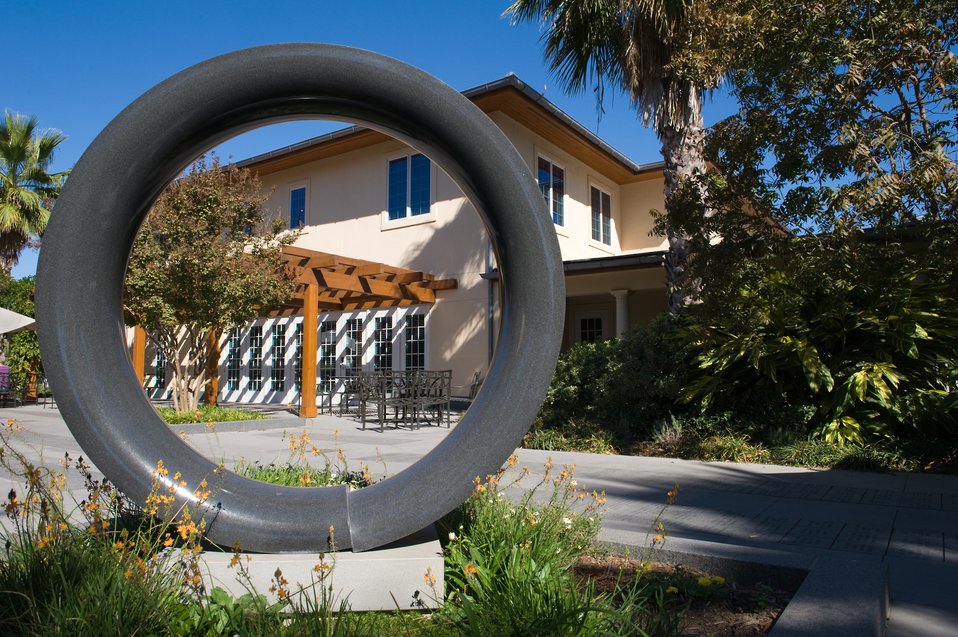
AF Spouse Raises Half a Million for Fisher House

The symbol of a broken ring, cracked but still intact, sits between the two newest Fisher Houses in San Antonio, on Nov. 25. Each of these 16,800 square foot Fisher Houses can accommodate up to 42 families visiting their injured love ones. Private donations were used to fund their construction, operation and maintenance.